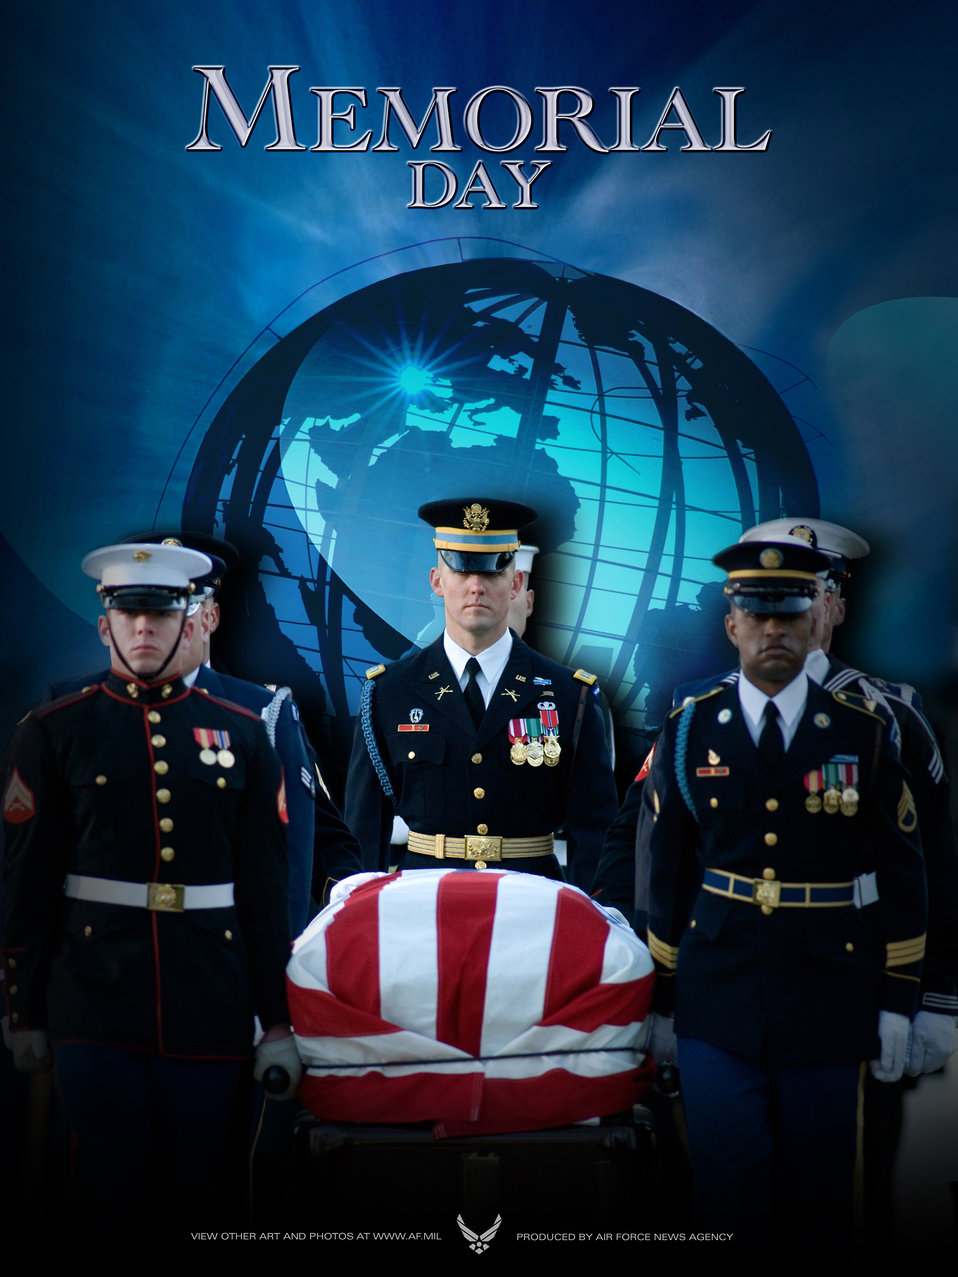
2008 Memorial Day Poster #1

2008 Memorial Day Poster